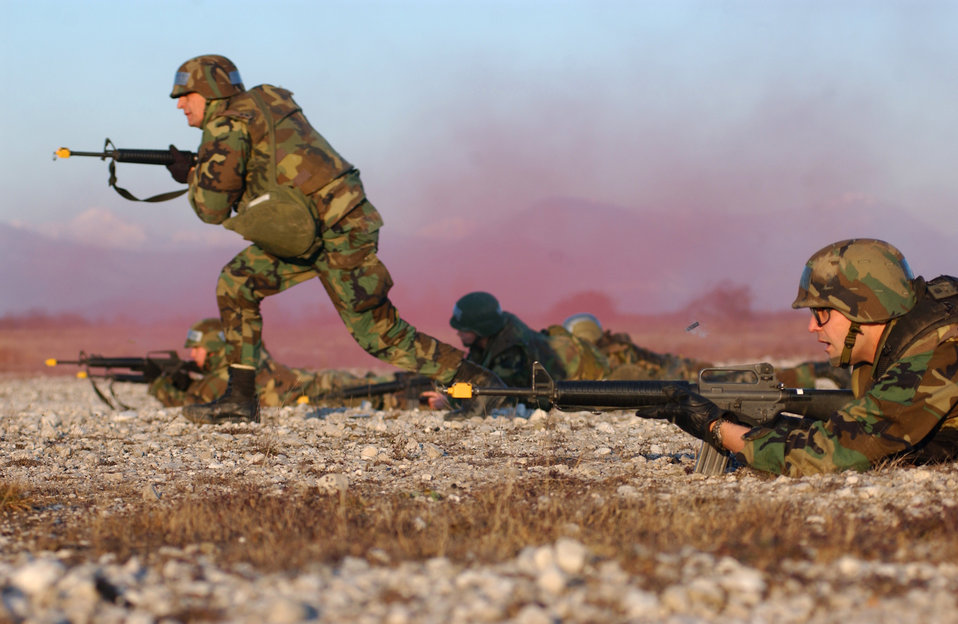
Field training exercise

AVIANO, Italy -- Chief Master Sgt. Dean Yoder moves in on